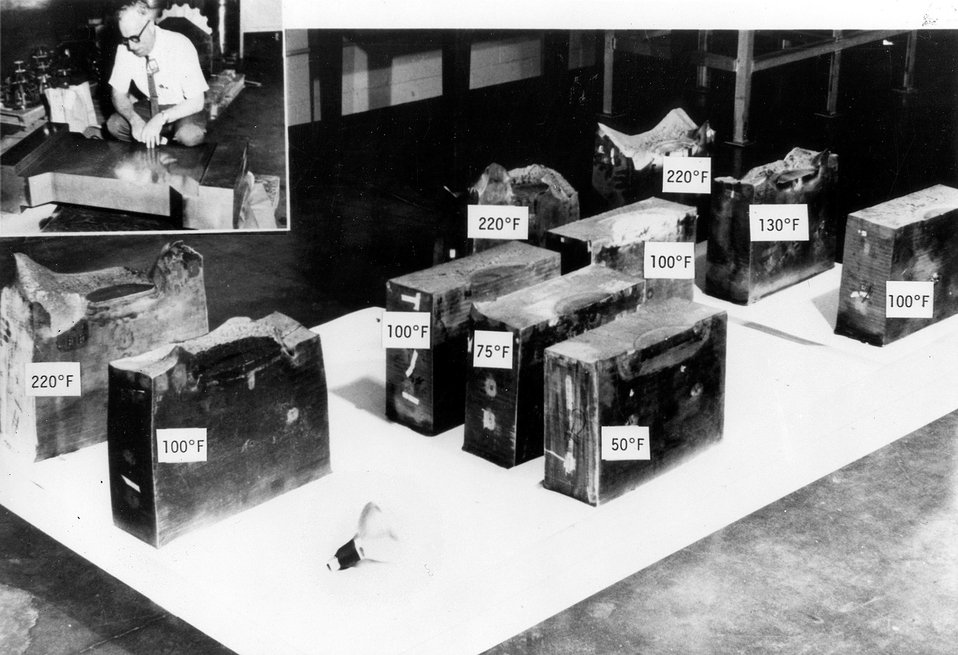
Since commercial nuclear reactor power stations will have pressure vessels with wall thicknesses of from 6 to 12 in., the Atomic Energy Commission is sponsoring investigations of the fracture characteristics of such vessels. c. 1972